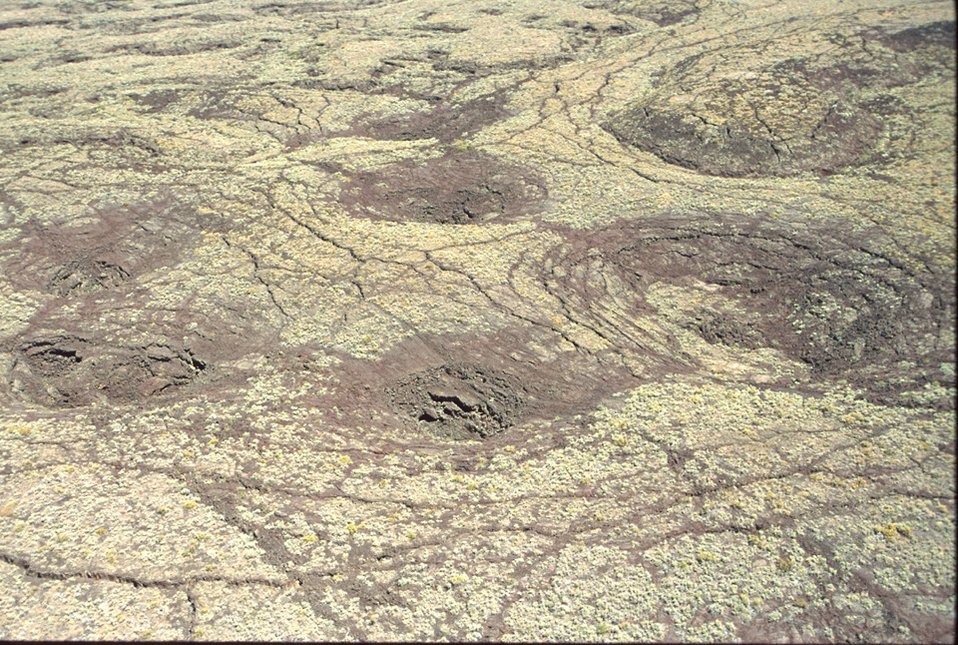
Shoshone Field Office USRD Upper Snake River District